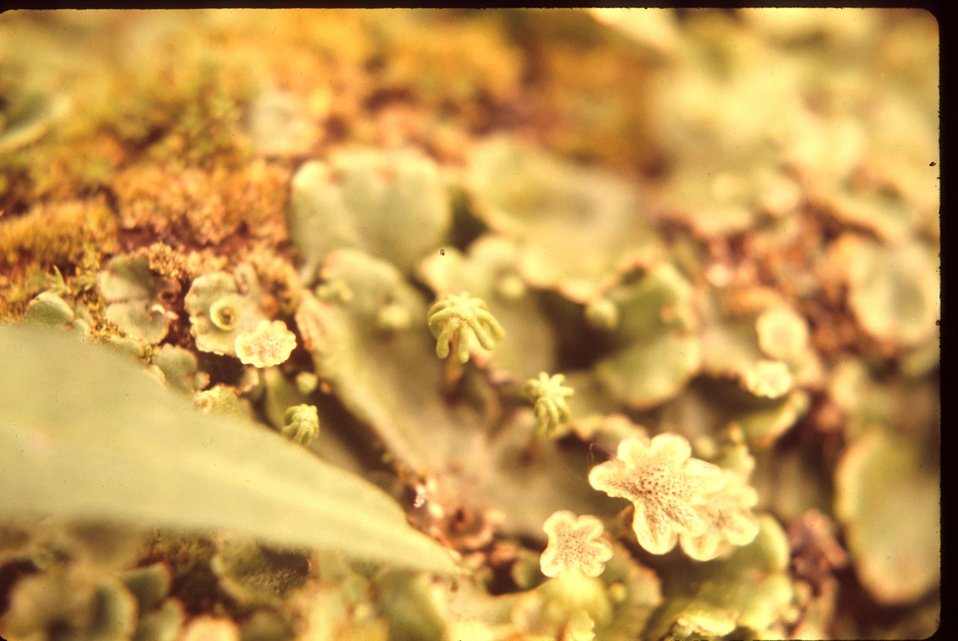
Marchantia sp. thalloid liverwort bryophyte